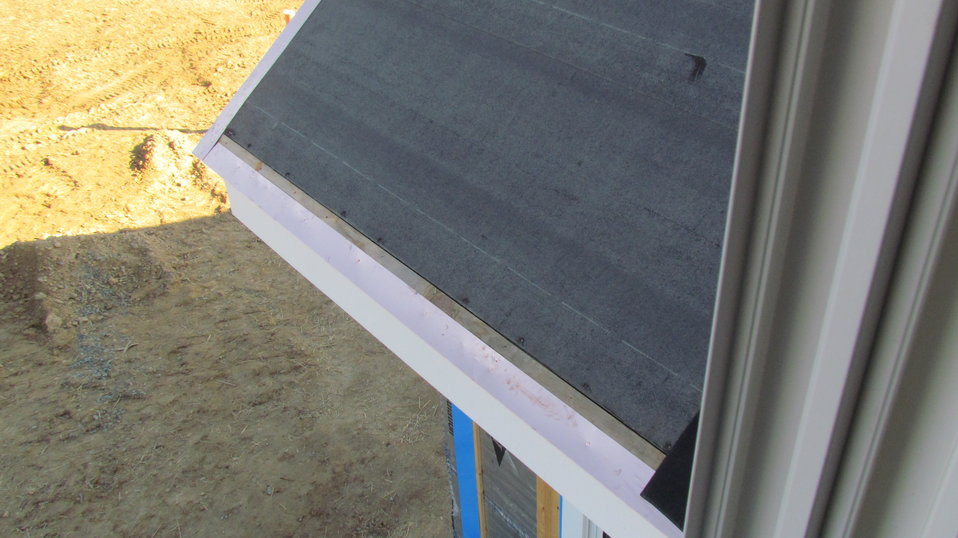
Roof detail showing construction materials under roofing shingles.